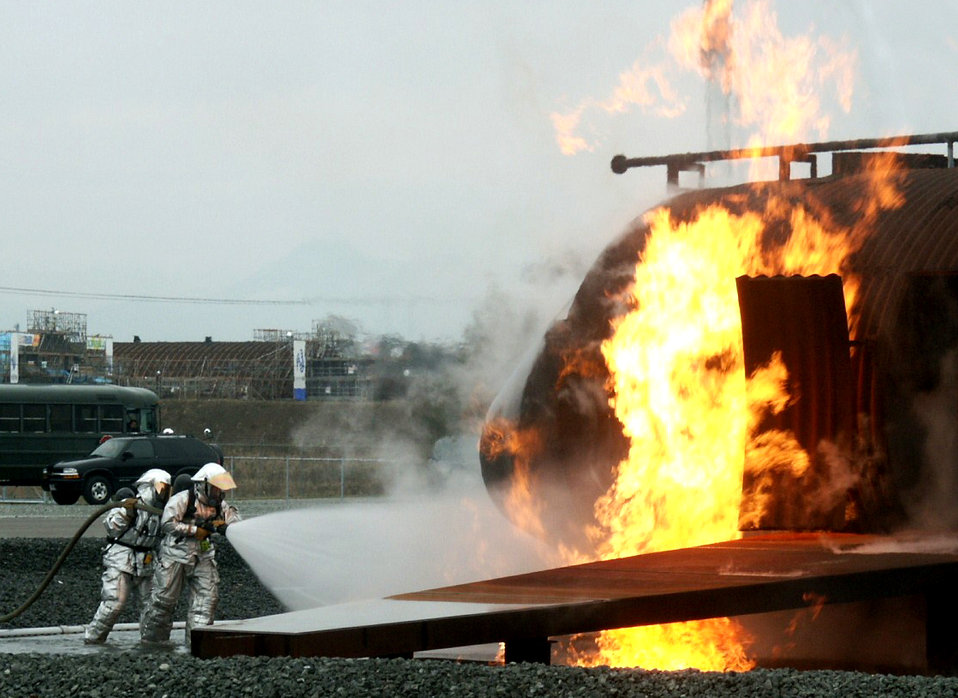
Flaming training

MISAWA AIR BASE, Japan -- American and Japanese firefighters demonstrate how to extinguish an aircraft fire at a fire training facility here Nov. 19. The training was the first to involve firefighters from neighboring Japanese cities. This was also the first time many of the Japanese firefighters had trained with a live fire. The firefighters are assigned to the 35th Civil Engineer Squadron.